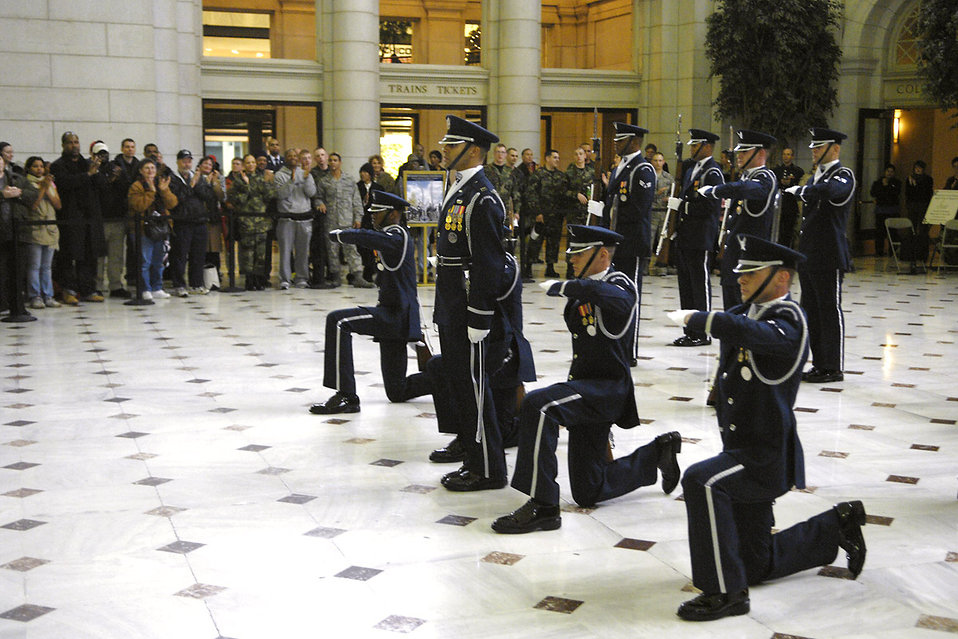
Air Force drill team kicks off 2008 season in D.C.

Air Force Honor Guard Drill Team members perform their new drill sequence during their unveiling performance Feb. 21 at Union Station in Washington, D.C. The unveiling drill is the first drill of the year and the formal presentation of the 2008 team to Air Force leadership and the general public. The drill team is the traveling component of the Air Force Honor Guard and tours Air Force bases worldwide showcasing the precision of today's Air Force to recruit, retain and inspire Airmen for the Air Force mission.